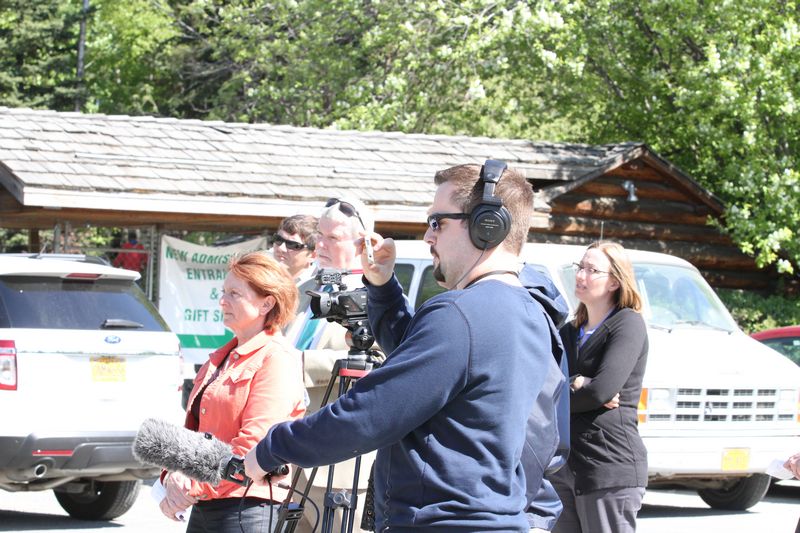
Press Conference on the polar bear holding module. USFWS/Rose Primmer